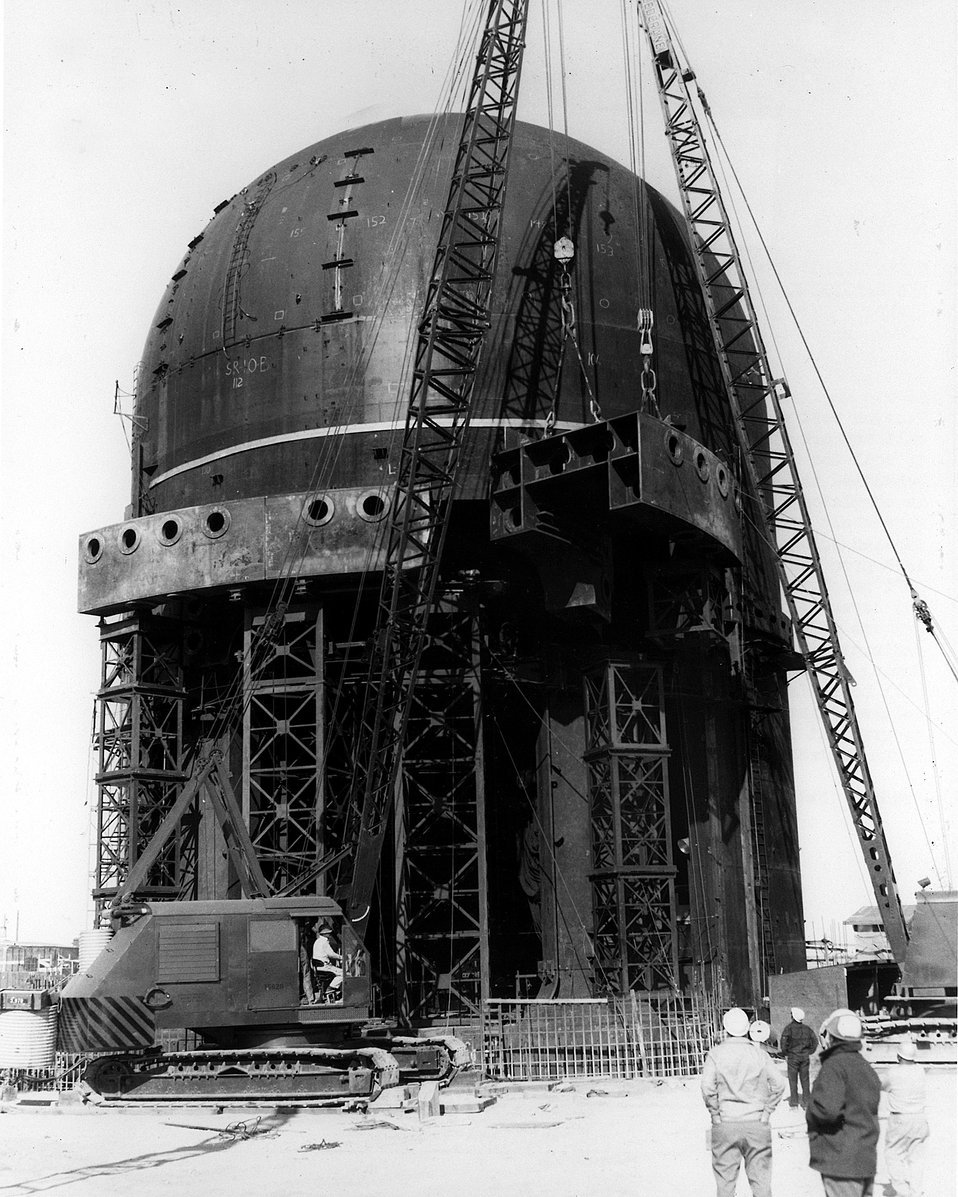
Two giant cranes lift a 104-ton door frame corner into position alongside the header and left door frame corner of the Loss of Fluid Test (LOFT) reactor containment building at the Atomic Energy Commission's National Reactor Testing Station west of Idaho Falls. Circa 1970.